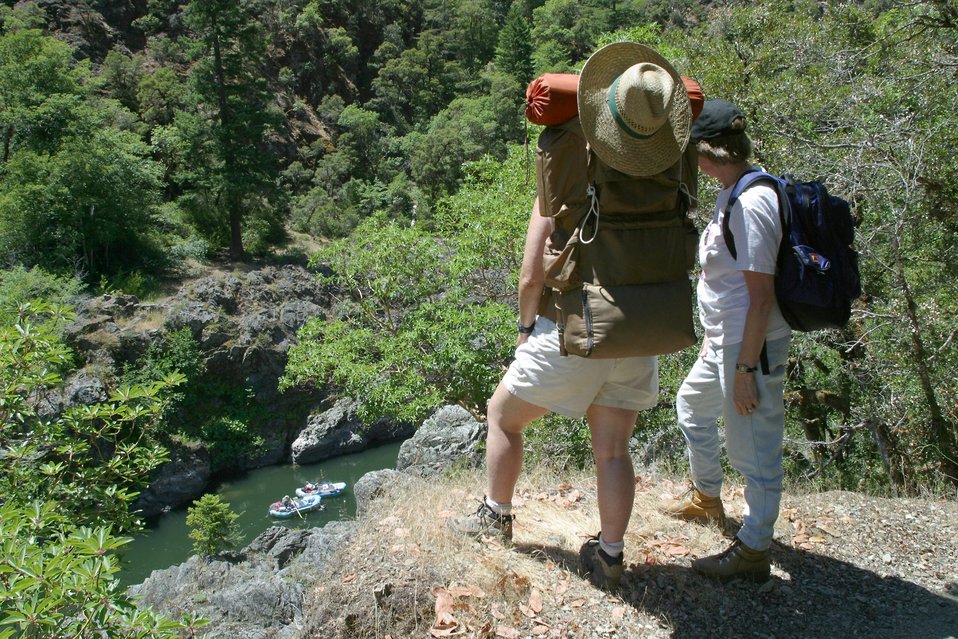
Hiking along the Rogue River Trail between Mule Creek and Blossom Rapids.